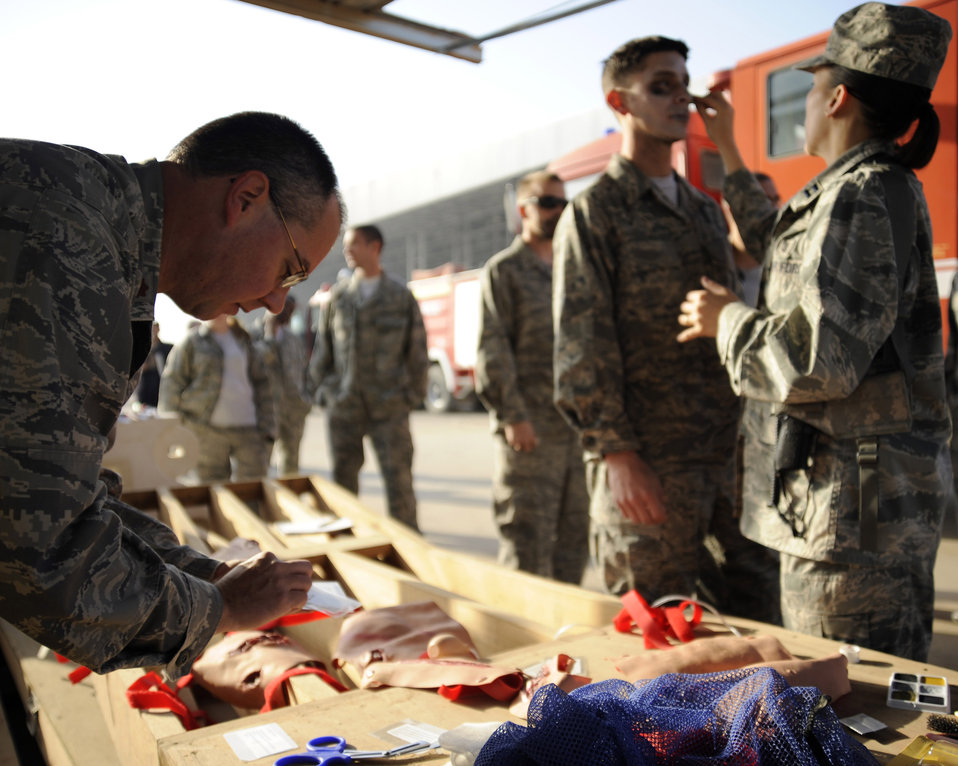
Internal training key to Iraqi air force independence

Maj. Christopher Hammond sorts wounded cards while Capt. Sunny Holden applies moulage to mock accident casualty Senior Airman Jeremy Fazely Nov. 21 at New Al-Muthana Air Base, Iraq. Major Hammond is the chief nurse for the 447th Expeditionary Medical Squadron. Captain Holden is the chief medical advisor for the 321st Air Expeditionary Advisory Squadron. Airman Fazely is a ground radio technician with the 447th Air Expeditionary Communications Squadron.